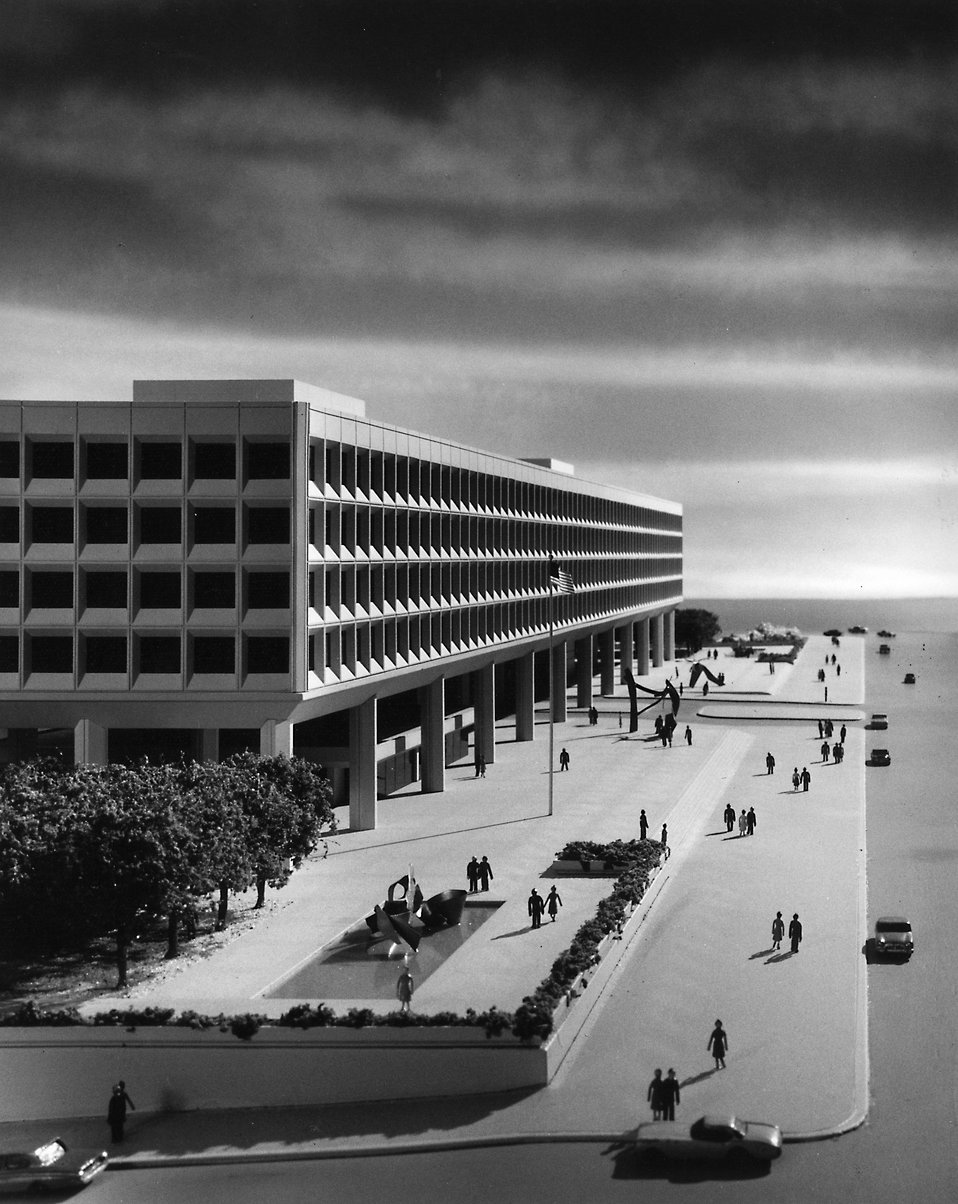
Federal Office building No. 5 Washington DC